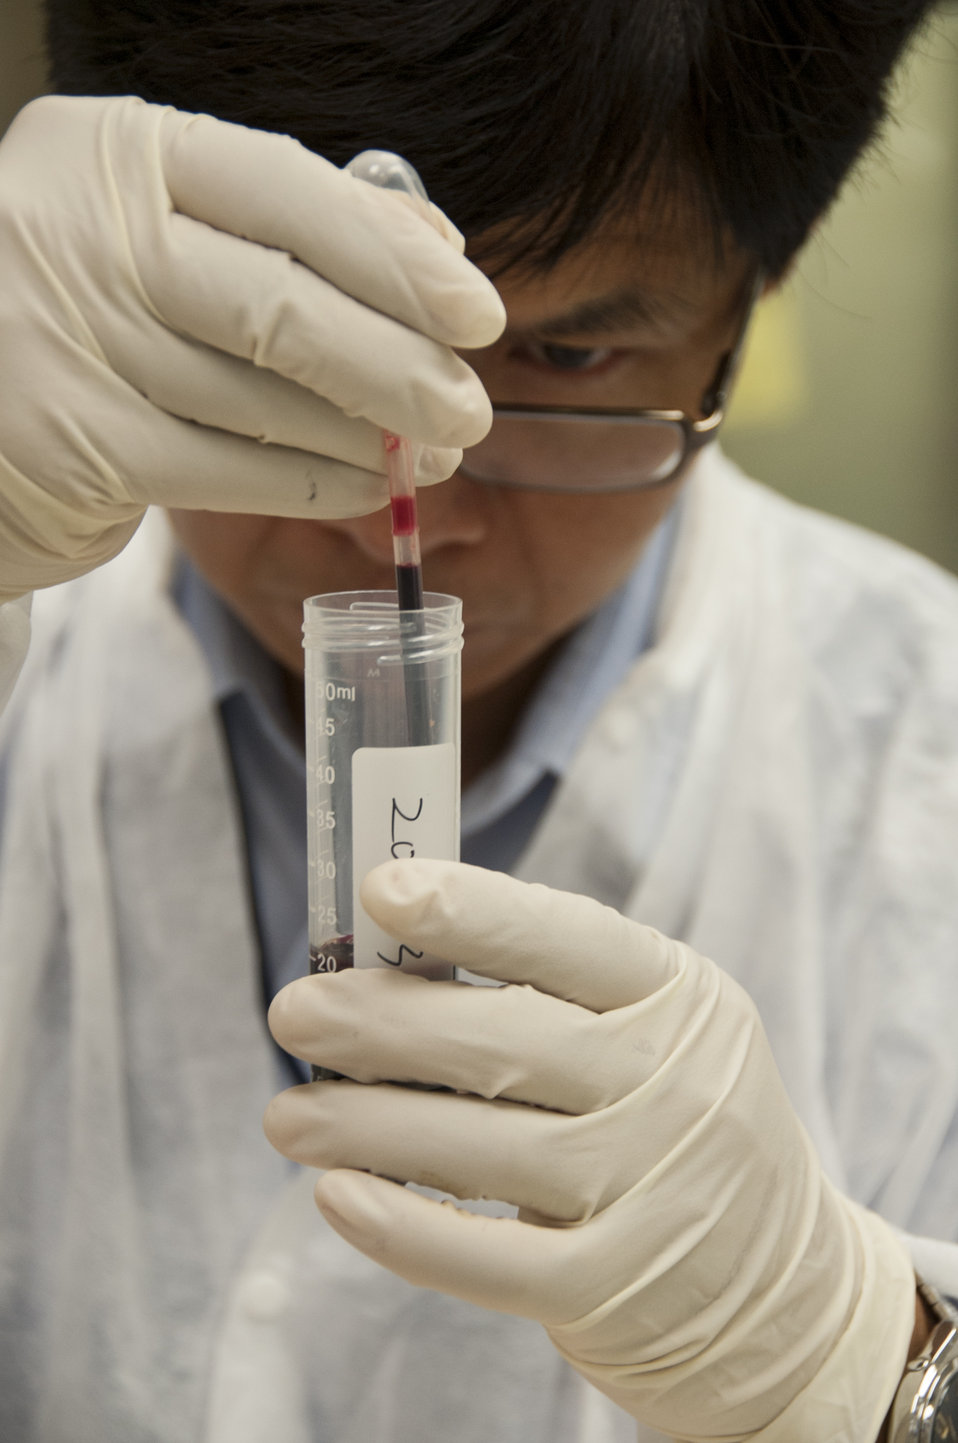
Blood Research: Saving Lives (8556)

Jason Liu, Ph.D., a laboratory chief at FDA’s Office of Blood Research and Review, collects white blood cells from processed whole blood. FDA is responsible for the safety of our nation’s blood supply and is at the forefront of evaluating and encouraging innovative technologies for protecting it.

Read this Consumer Update to learn more: Advances in Saving Lives with Blood